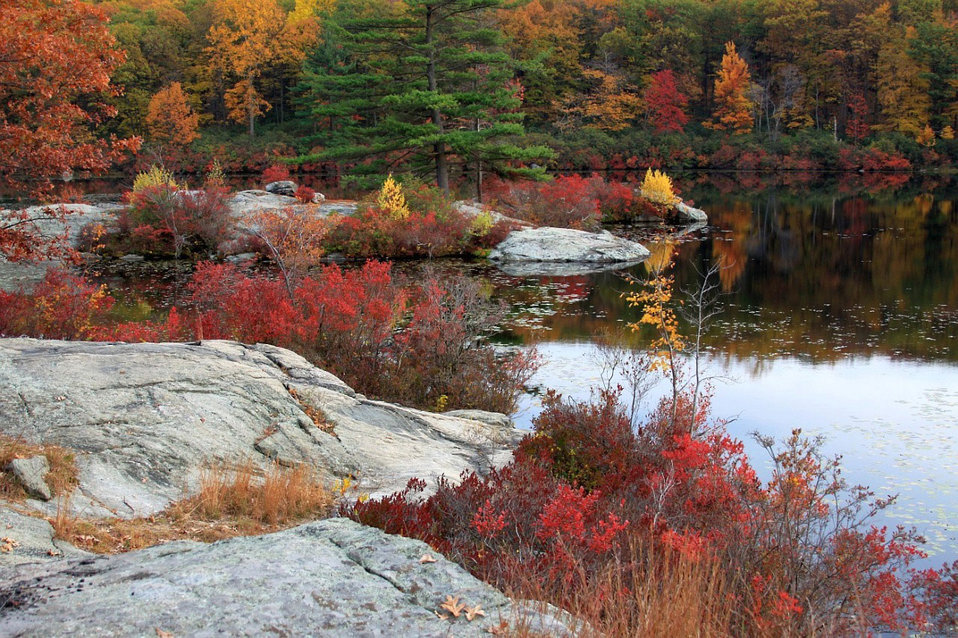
Bay

Fall time colors around the lake.